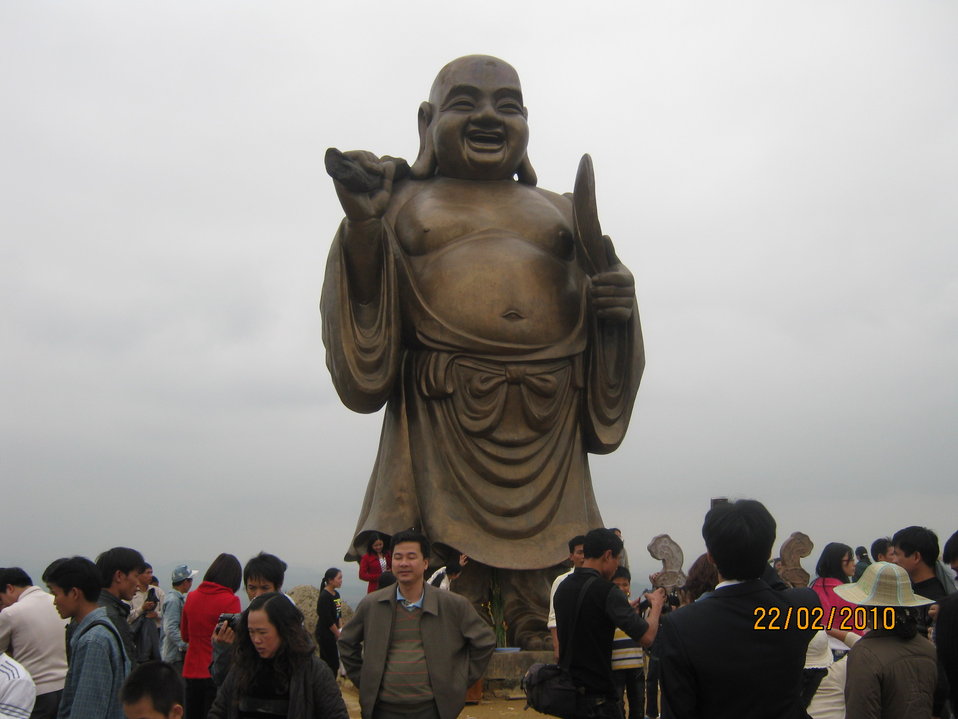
Tiếng Việt: Đại tượng phật Di Lặc ở chùa Bái Đính, Ninh Bình.